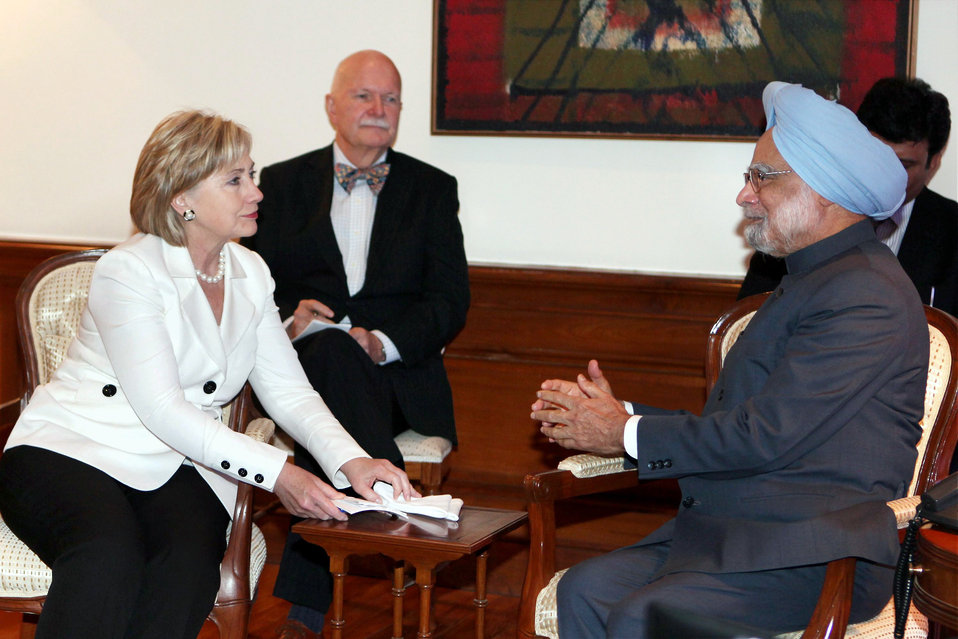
Secretary Clinton Visits Indian Prime Minister

U.S. Secretary of State Hillary Rodham Clinton talks with Indian Prime Minister Manmohan Singh during their meeting in New Delhi, India July 19, 2009.